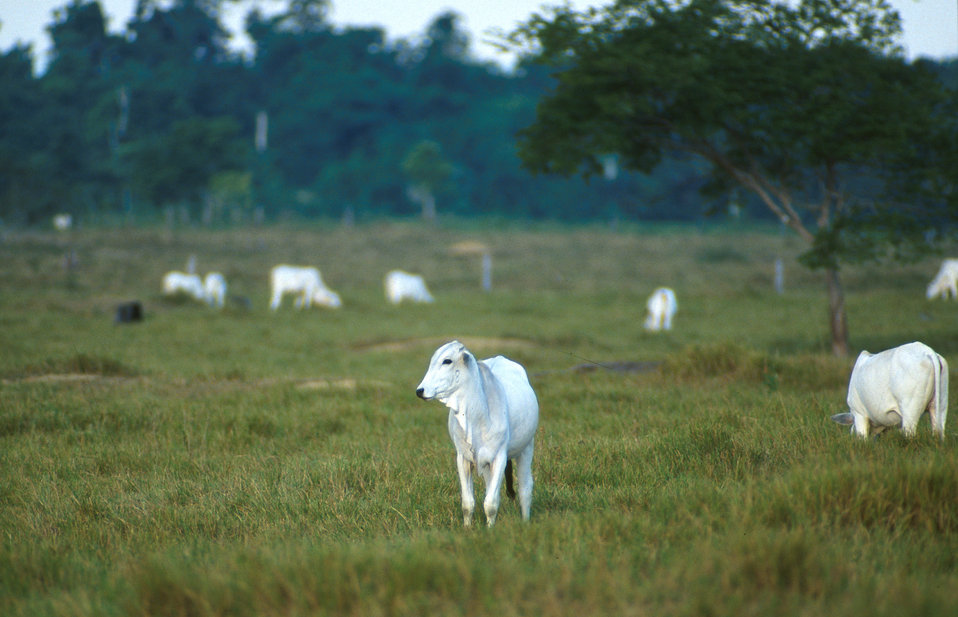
The Nelore breed of beef cattle grazes in a field in the Itapebi County of Bahia, Brazil.